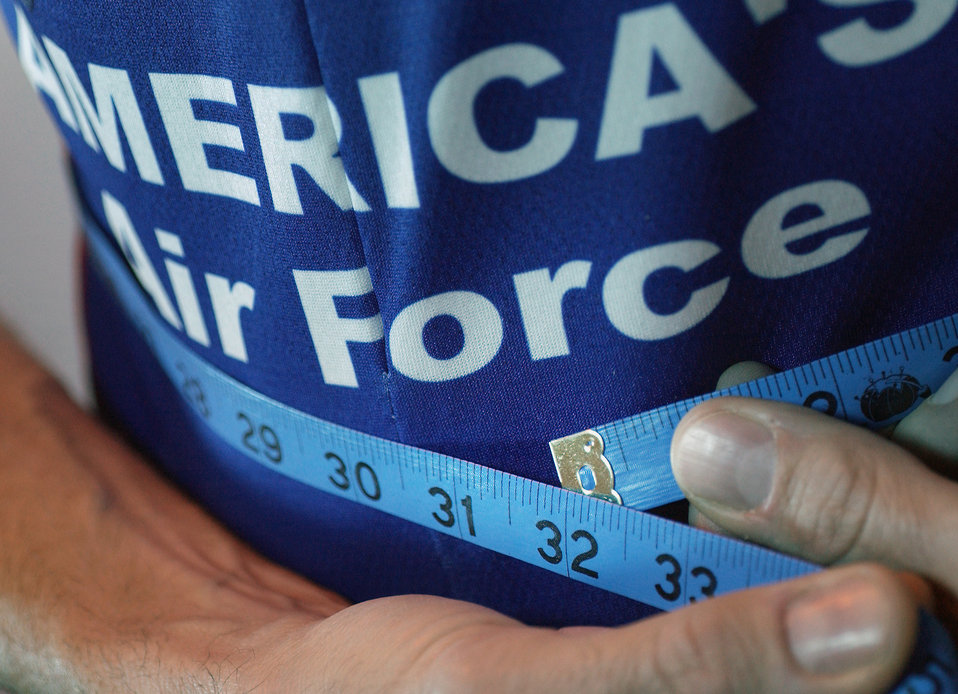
Tale of the tape

WASHINGTON -- One of the new three-pronged fitness standards being adopted by the Air Force is the waist measure. Taken with a tape wrapped around the abdomen, and placed midway between the bottom rib and top of the pelvic bone, the waist measure serves as a total-health gauge. The primary indicator being measured is visceral or intra-abdominal fat. The waist measure is independent of age or height.